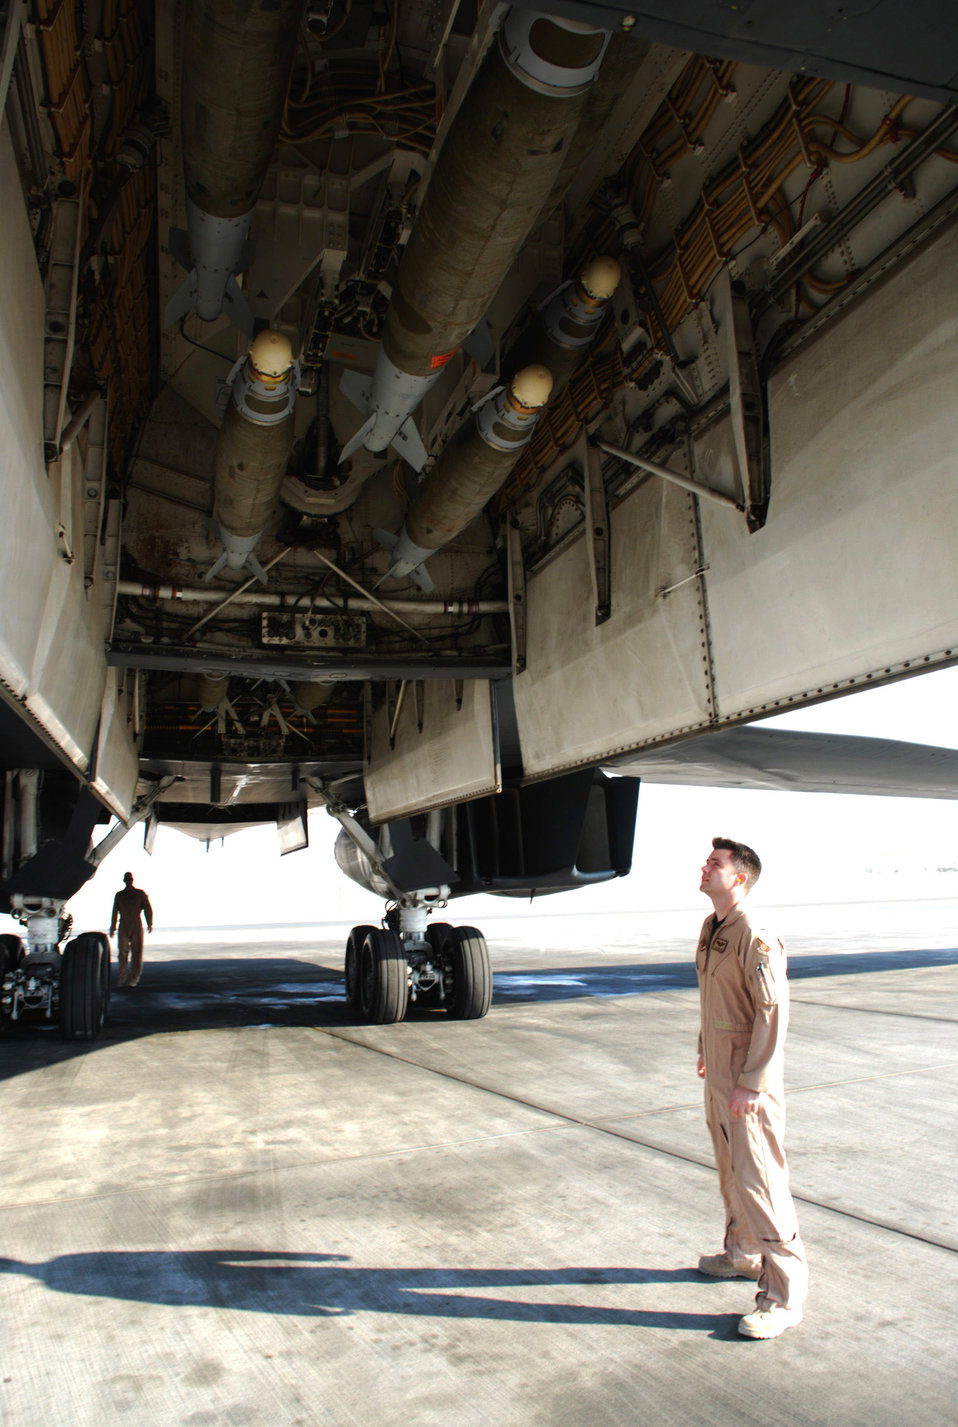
A heavy load

1st Lt. Jason Edwards checks the bomb load of a B-1B Lancer Dec. 29 as he and the rest of the aircrew preflight check the bomber prior to a mission. Lieutenant Edwards is with the 9th Expeditionary Bomb Squadron at an air base in Southwest Asia.